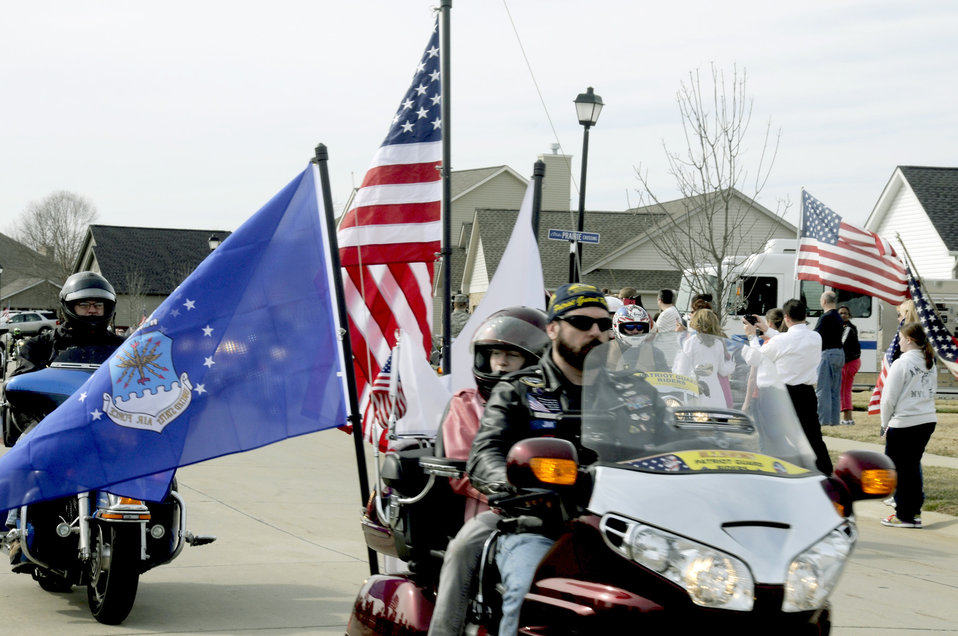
They stand for Zac

Patriot Guard Riders lead the funeral procession route of Airman 1st Class Zachary Cuddeback March 12, 2011, in O'Fallon, Ill. Airman Cuddeback and another Airman were killed March 2 when a man opened fire on a bus carrying U.S. Airmen at an airport in Frankfurt, Germany. Airman Cuddeback will be laid to rest next to his grandfather at a cemetery in O'Fallon, Ill.